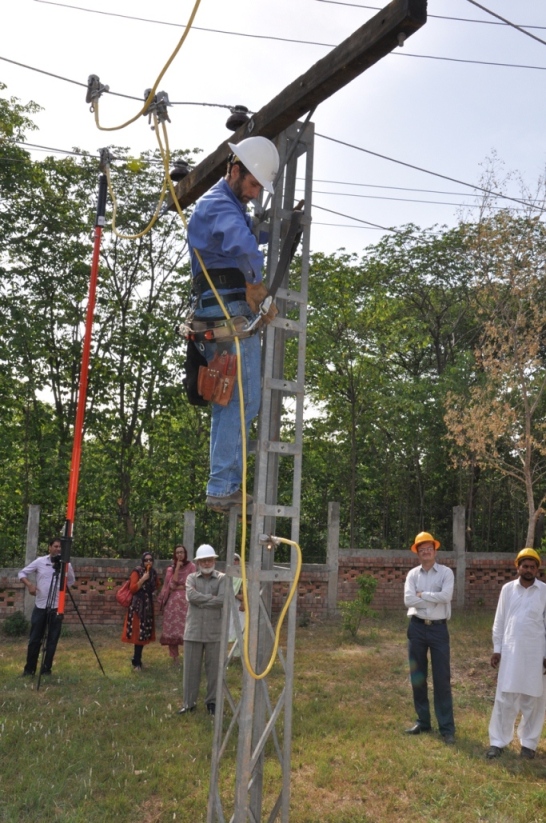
Quick Impact Safety Training Program at Wapda Staff College

Islamabad, May 21, 2012: The United States Government through the United States Agency for International Development (USAID) “Quick Impact Lineman Training Program” will help in save thousands of linemen in Pakistan. At the concluding session of today’s training program held at the WAPDA Staff College, the deputy chief of party of USAID’s Power Distribution Program officially handed over linemen safety tools to distribution companies including the Islamabad Electric Supply Company (IESCO), Multan Electric Power Company (MEPCO), and Hyderabad Electric Supply Company (HESCO). USAID has provided safety trainings to over 415 linemen and will provide training to thousands more in the coming months.